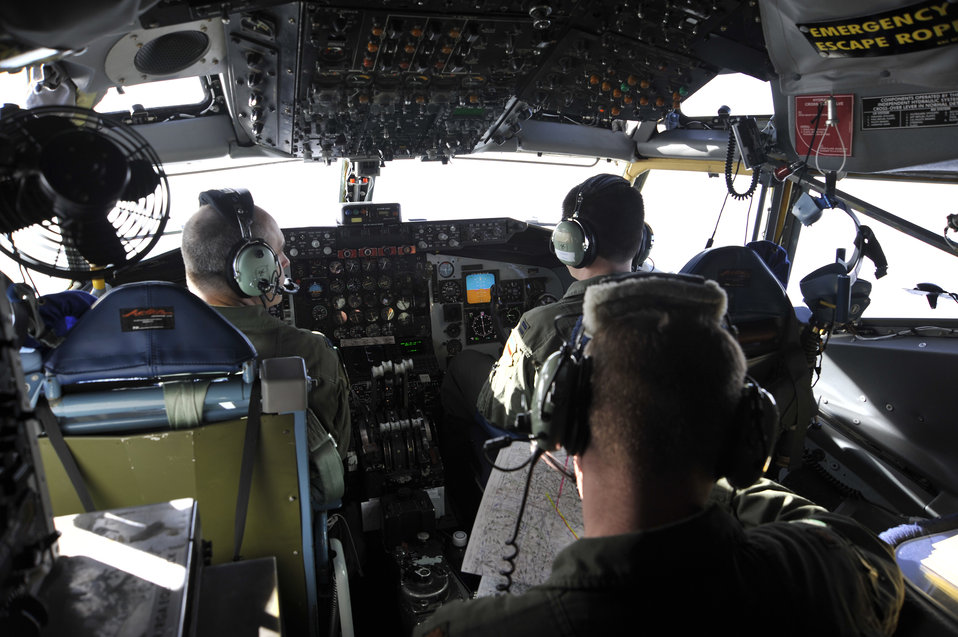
Haiti Observation

Offutt AFB, NE, 45th Reconnaissance Squadron pilots, fly an OC-135B Observation Aircraft Jan 16 over Haiti. Army, Navy and Air Force personnel used the capabilities of the OC-135B to photograph Haiti, to get a better understanding of the devastation from the earthquake that hit the country Jan. 12.